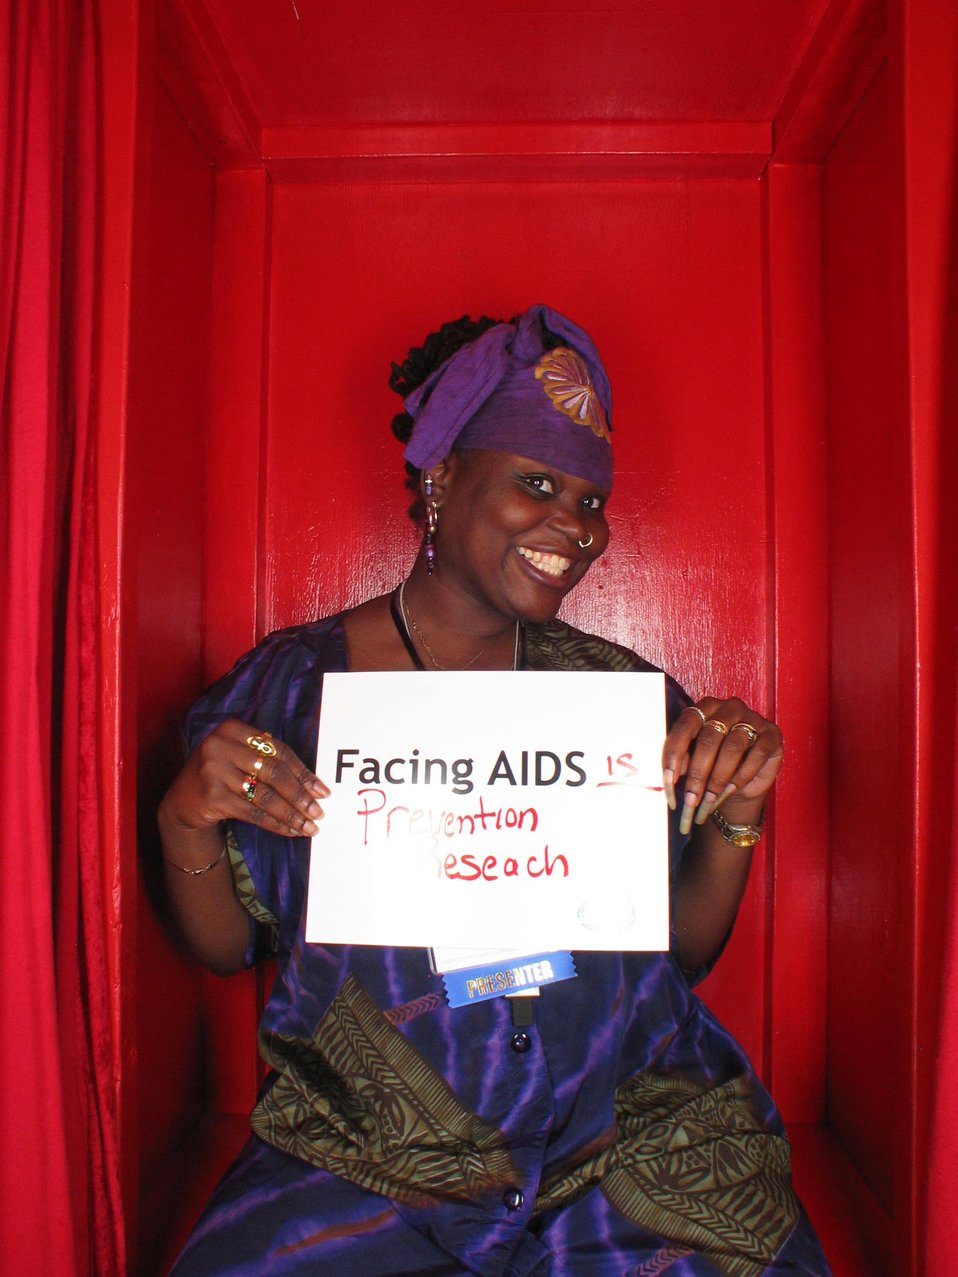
Facing AIDS is prevention research